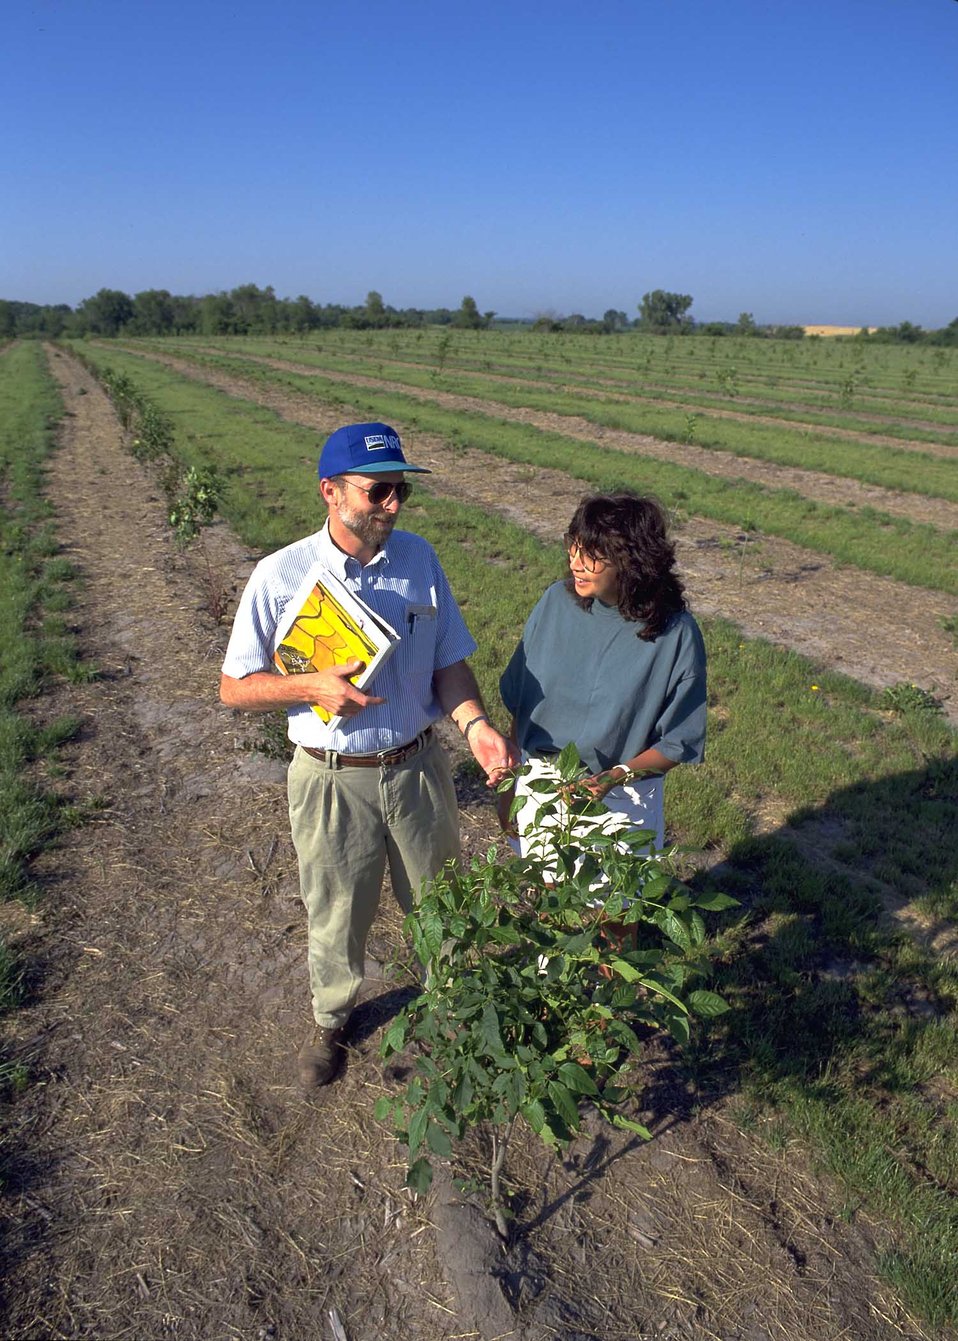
Doug Johnson, NRCS District Conservationist, and Josie Collins, landowner, taking a look at Collins trees on her farm near Muscatine, IA.